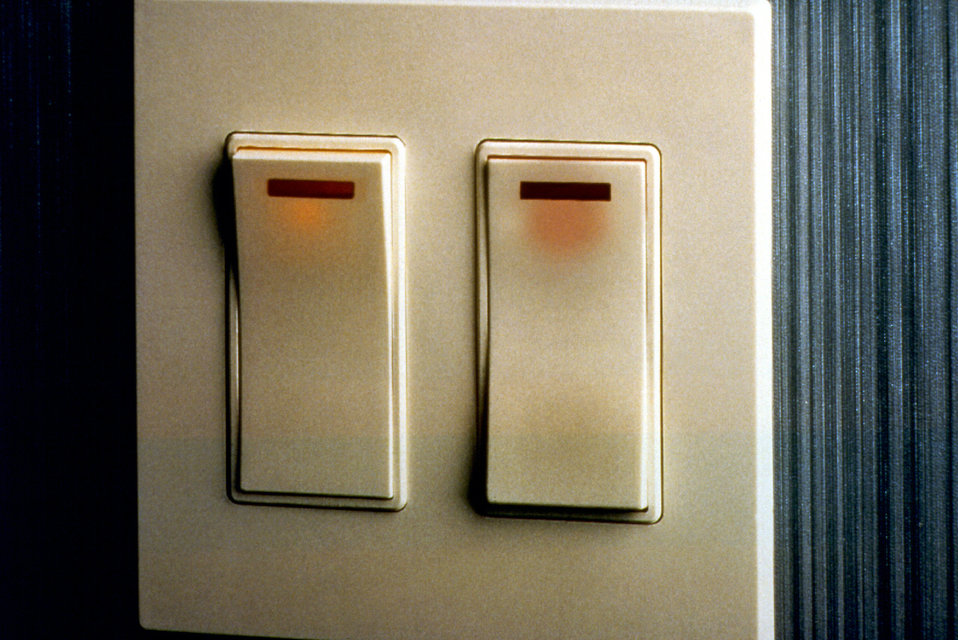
This image depicted two rocker panel-style light switches, which for those with mobility, or hand, finger, or arm difficulties, are much easier to manipulate. These switches could be pushed or pressed with an elbow, shoulder, or other body parts if ones hands were unavailable. Standard switches are much more difficult to use, and require a concentrated pressure on a very small area, usually with ones finger. These switches greatly facilitate the act of controlling lights and household appliances not only for those in need of such assistance, but for all who might interact with these controls.'The Center for Universal Design (CUD) conducts original research to learn what design solutions are appropriate for the widest diversity of users, and what tools are most useful to practitioners wishing to successfully practice universal design. The Center collaborates with builders and manufacturers on the development of new design solutions.'